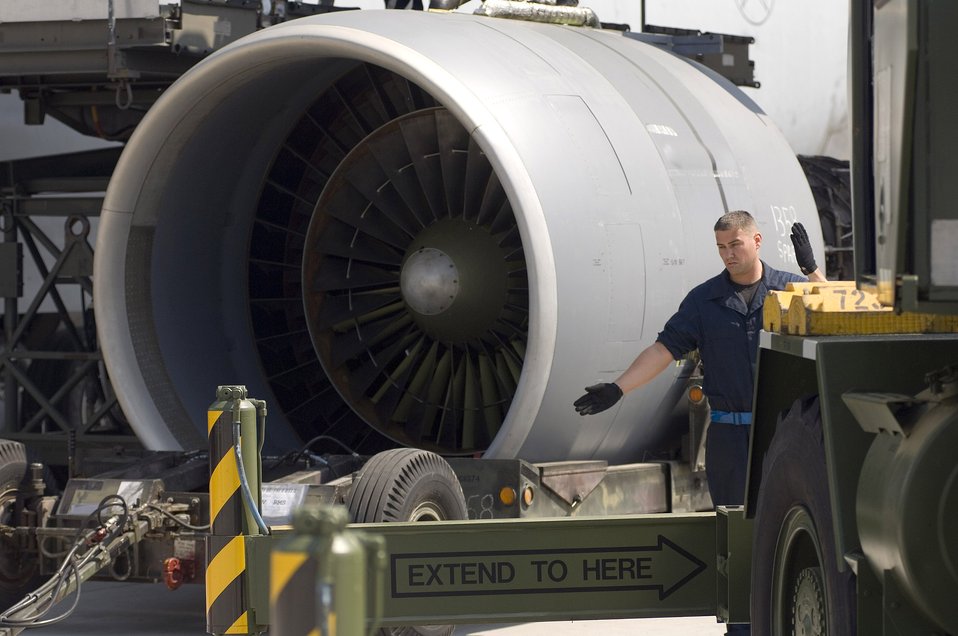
Maintainers keep C-5s flying

Staff Sgt. Sean Donovan directs a crane into position while preparing to mount an engine on a C-5 Galaxy on May 12, 2006, at Ramstein Air Base Germany. Sergeant Donovan is a jet engine mechanic assigned to the 723rd Air Mobility Squadron.